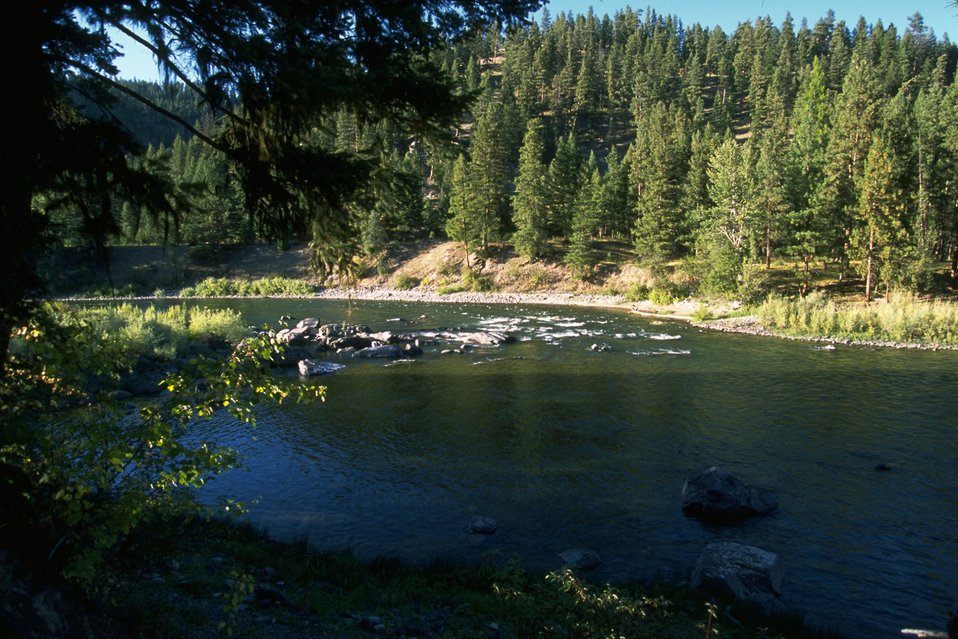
Blackfoot River